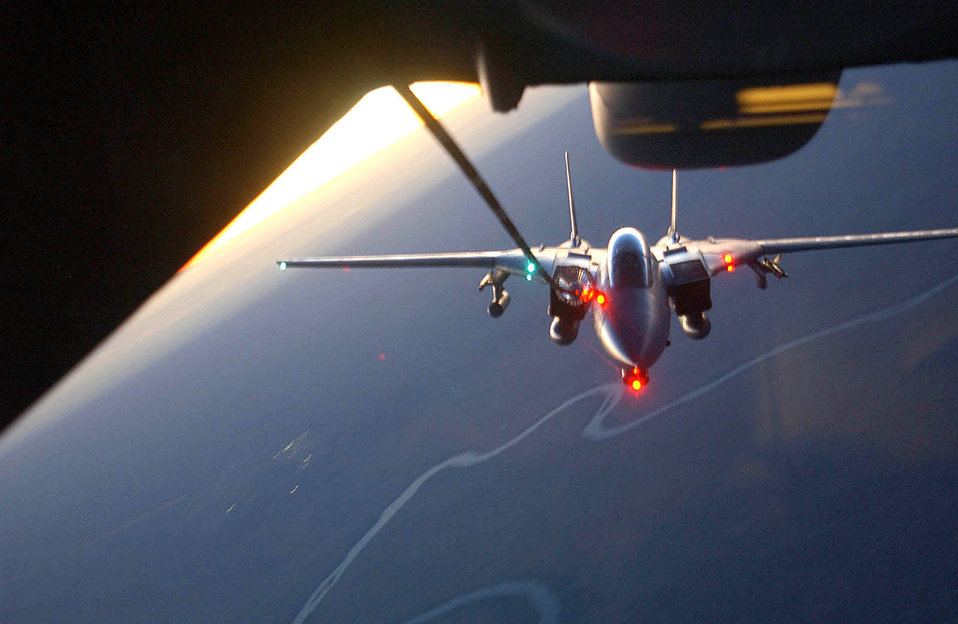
Desert mission

SOUTHWEST ASIA (AFPN) -- A Navy F-14 Tomcat refuels over Iraq at sunset from a KC-10 Extender aircraft assigned to the 908th Expeditionary Refueling Squadron. The F-14 is supporting Operation Iraqi Freedom.